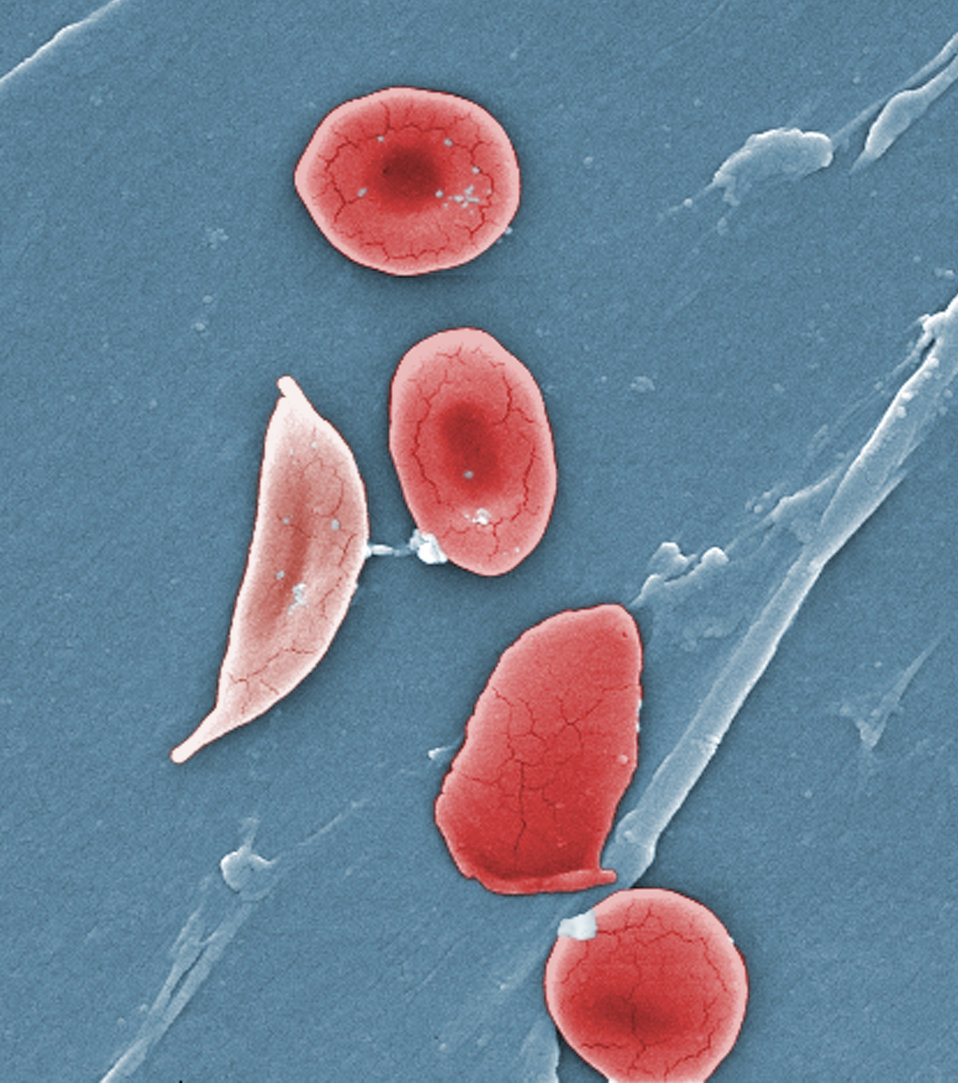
This digitally-colorized scanning electron micrograph (SEM) revealed some of the comparative ultrastructural morphology between normal red blood cells (RBCs), and a sickle cell RBC (left) found in a blood specimen of an 18 year old female patient with sickle cell anemia, (HbSS); People who have this form of sickle cell disease inherit two sickle cell genes ('S'), one from each parent. This is commonly called 'sickle cell anemia', and is usually the most severe form of the disease.